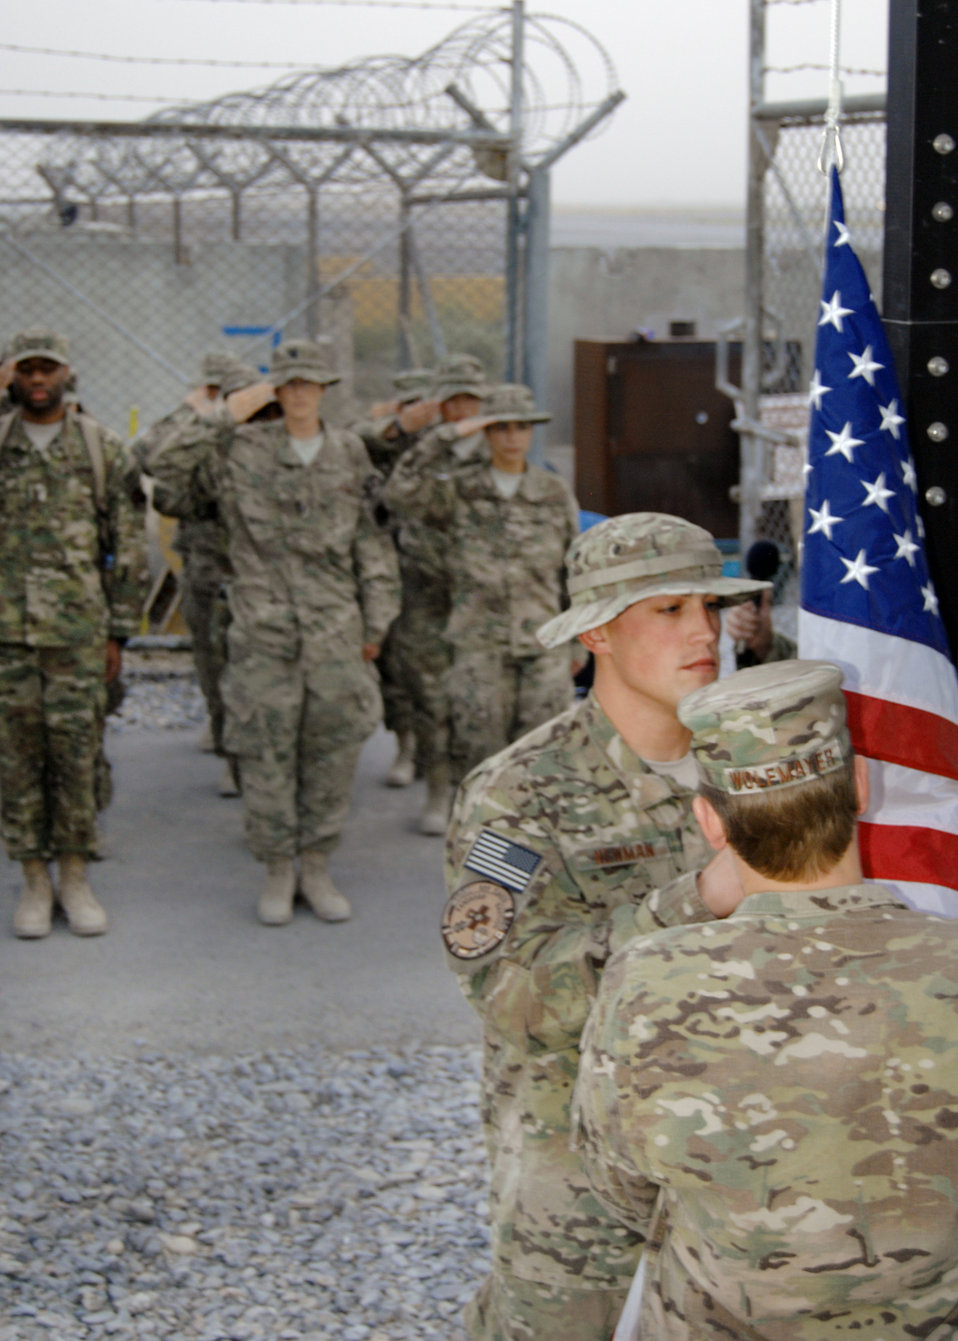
Raise the Flag

Airmen with the 651st Expeditionary Aeromedical Evacuation Squadron bow their heads in prayer during a retreat ceremony held at Kandahar Airfield, Afghanistan, Aug 4, 2012.